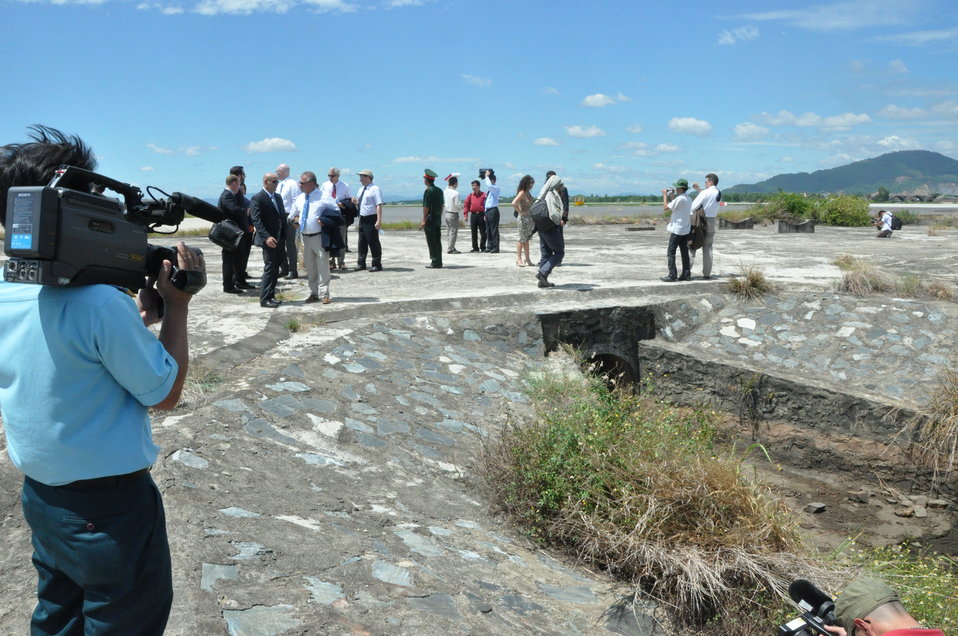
Touring the Danang Airport site with project launch participants

Danang, August 9, 2012